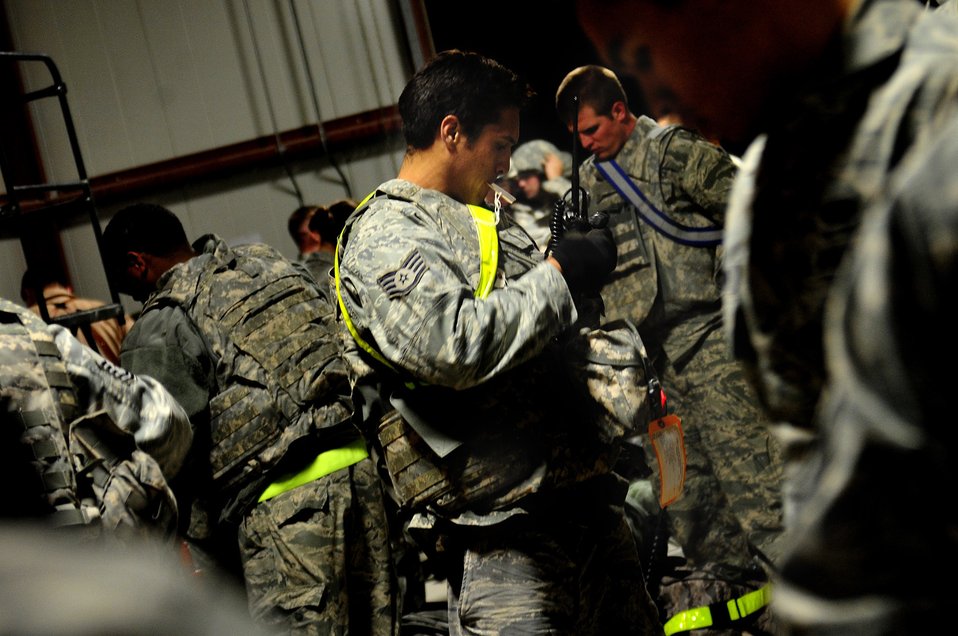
Last Airmen flying out of Iraq

Staff Sgt. Aviam Krupnick prepares to turn in his weapon Dec. 18, 2011, at an undisclosed location in Southwest Asia. Krupnick and the Airmen accompanying him are the last service members to redeploy from Iraq. Krupnick is an aerial porter assigned to the 407th Air Expeditionary Group.